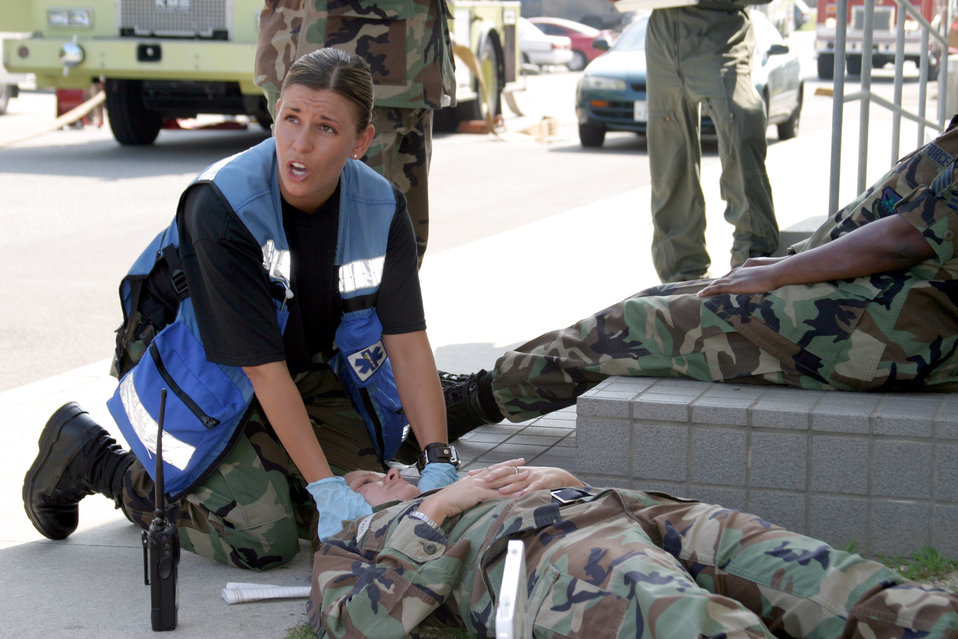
To the rescue

KADENA AIR BASE, Japan -- Staff Sgt. Leslie Schafferman shouts instructions to medical first-responders during a mass casualty exercise here as she treats an Airman for injuries sustained in a simulated building collapse. Sergeant Schafferman is an 18th Medical Operations Squadron independent-duty medical technician. The scenario was part of the 18th Wing's weeklong operational readiness exercise that ends April 23.